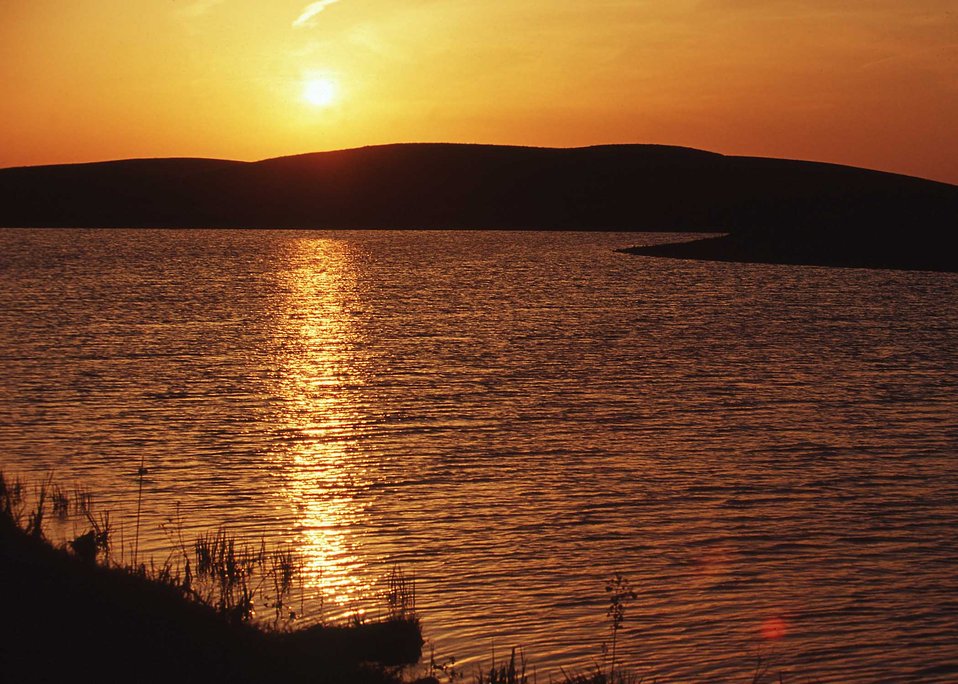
A sunset above water

A sunset above the waters of South Dakota.